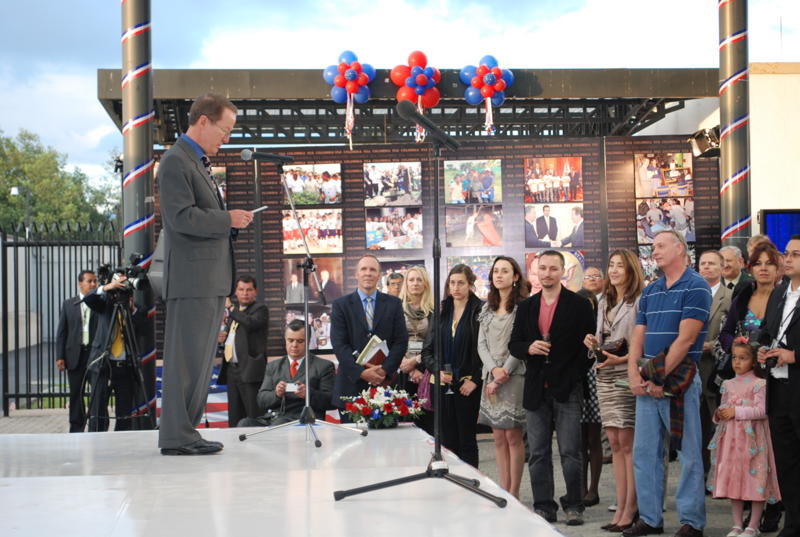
Ambassador Brownfield Toast the Fourth of July and Remembers Operación Jaque

U.S. Ambassador to Colombia William R. Brownfield toasts to the Fourth of July as he remembers Operación Jaque on July 2, 2008, which resulted in the liberation of three American citizens (two of whom are in the photograph – Marc Gonsalves and Thomas Howes), Ingrid Betancourt, and 11 Colombian citizens, during the U.S. Independence Day celebration on July 2, 2010, at the U.S. Embassy Bogotá in Colombia.